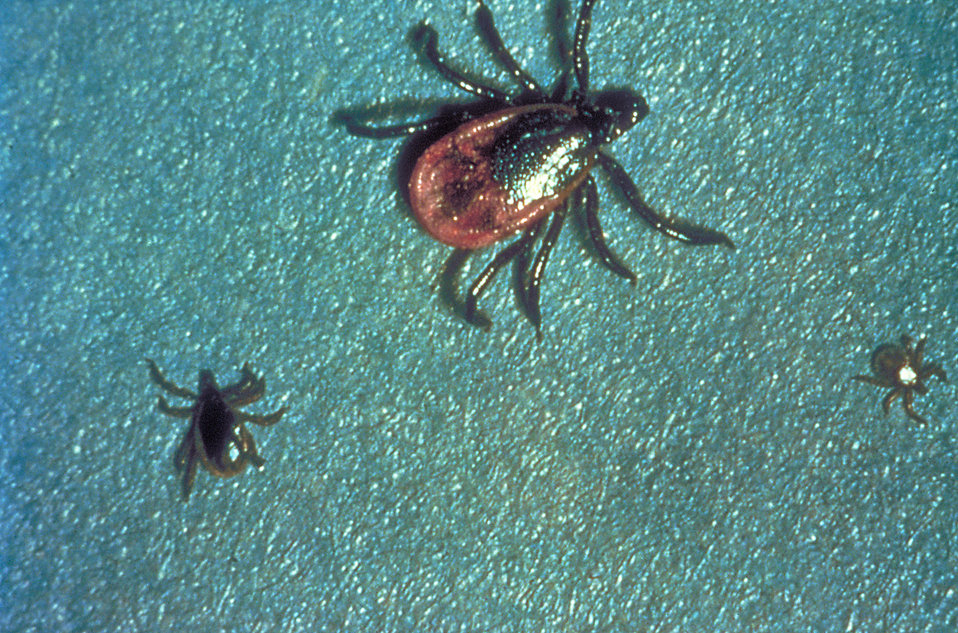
These "black-legged ticks", Ixodes scapularis, are found on a wide rage of hosts including mammals, birds and reptiles.